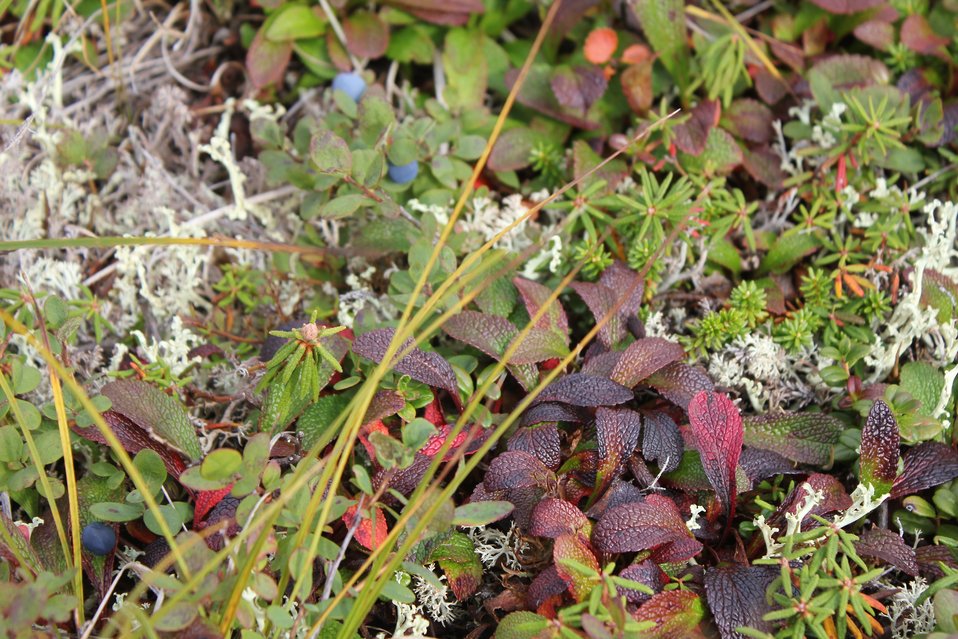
Blueberries on the tundra (Vaccinium sp.)